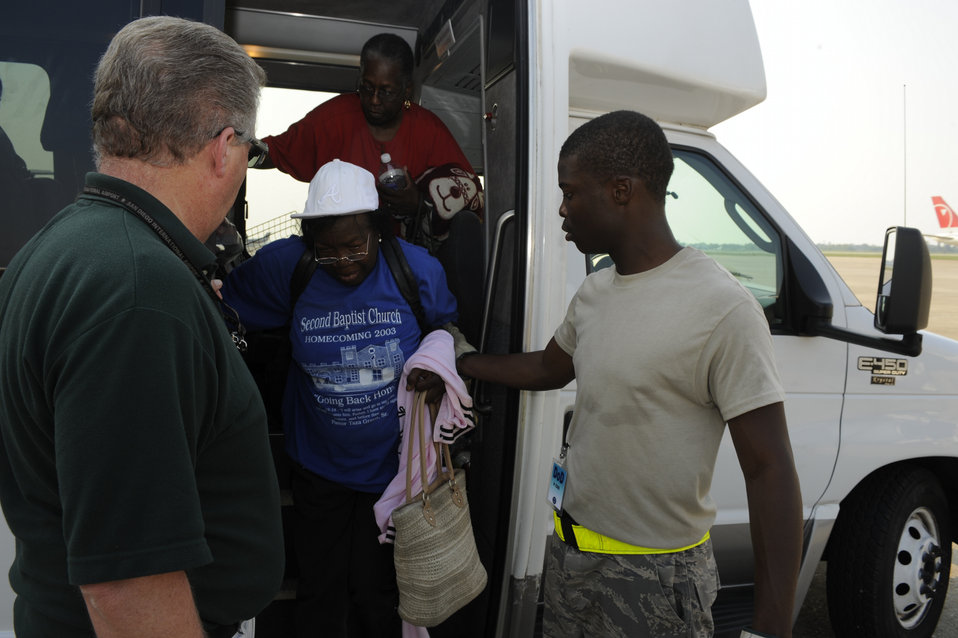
Airmen there as hurricane evacuation begins

Senior Airman Gary Williams assists evacuees who are leaving before Hurricane Gustav hits the Gulf Coast as they prepare to board a flight at the Louis Armstrong International Airport in New Orleans Aug. 30. Officials with the Federal Emergency Management Agency and Department of Defense have chartered aircraft to transport evacuees to destinations safely outside the path of the hurricane. Airman Williams is from the 615th Contingency Response Wing at Travis Air Force Base, Calif.